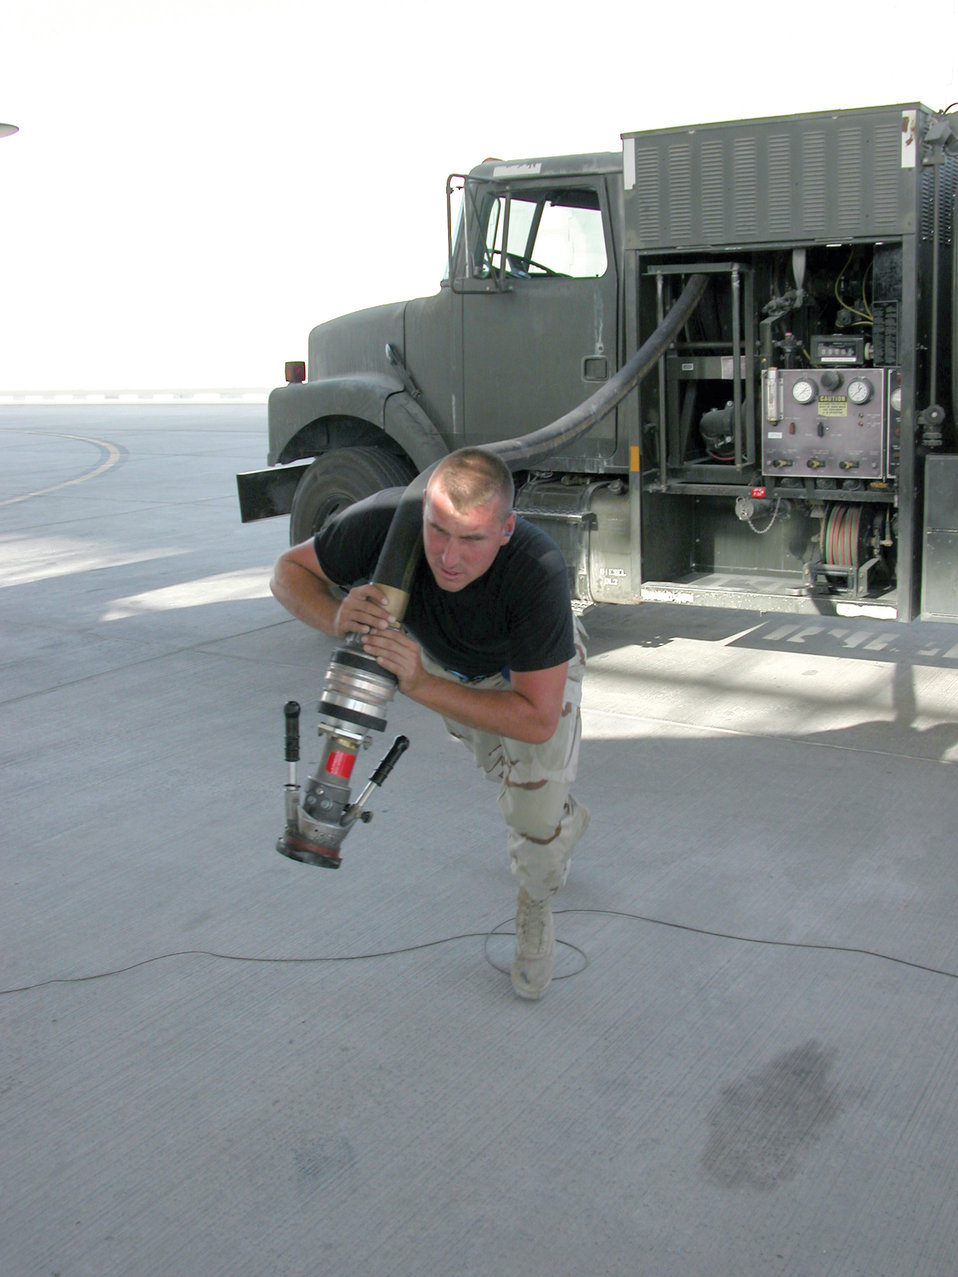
POL Airmen fuel the wing

SOUTHWEST ASIA -- Airman 1st Class Jason Joblonowski pulls a hose from a fuel truck at a forward-deployed location. He is from Luke Air Force Base, Ariz.